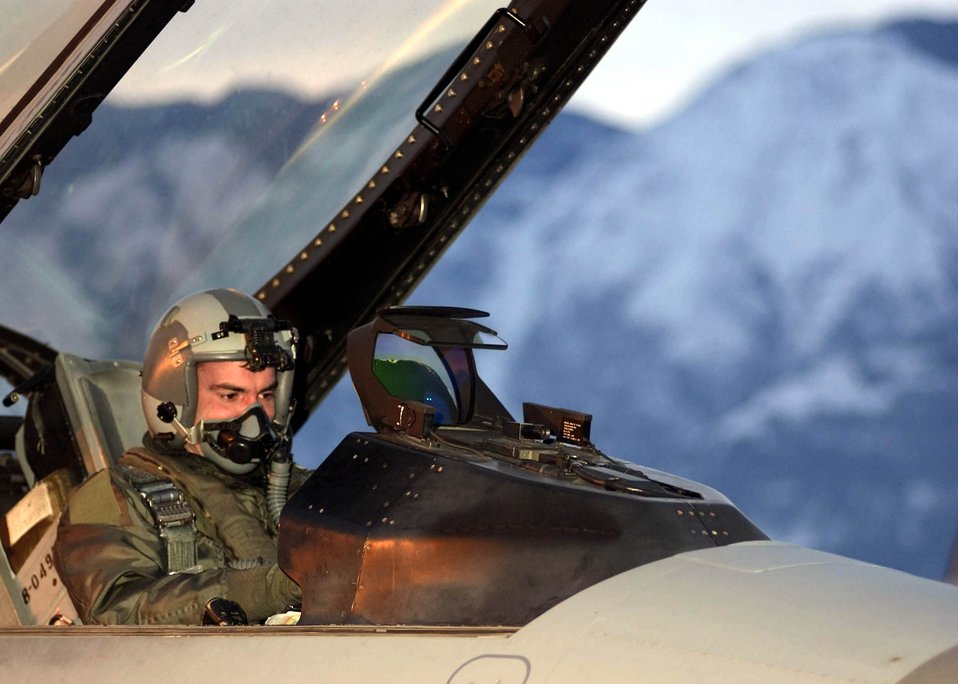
Frozen Falcons

AVIANO AIR BASE Italy -- Capt. Phil Lancaster prepares his F-16 Fighting Falcon for a nighttime flight here. A cold front hit the area Feb. 21 and left almost six inches of snow. The area averages less than four inches of snowfall annually; the last significant snowfall was in December 2001. Captain Lancaster is assigned to the 510th Fighter Squadron.